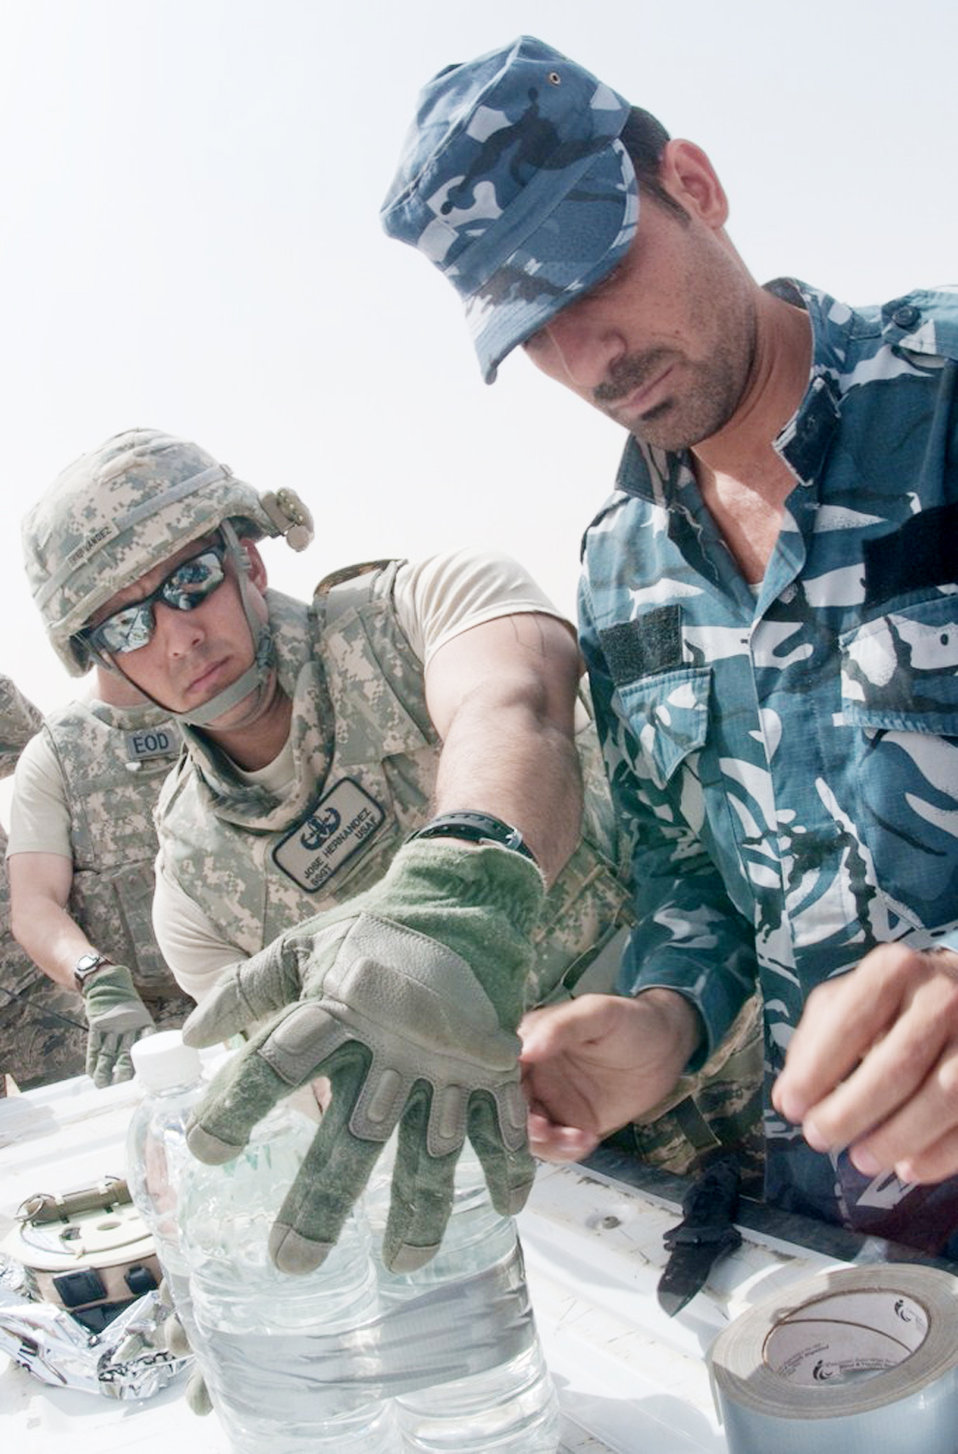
Airmen train Iraqi EOD squad

Tech. Sgt. Joe Hernandez demonstrates the construction of a water charge designed to disable an improvised explosive device to a member of the Dhi Qar Province explosive ordnance team March 11, 2010, at Ali Base, Iraq. Sergeant Hernandez is on the 407th Air Expeditionary Group Explosive Ordnance Disposal team deployed from Luke AFB, Ariz.